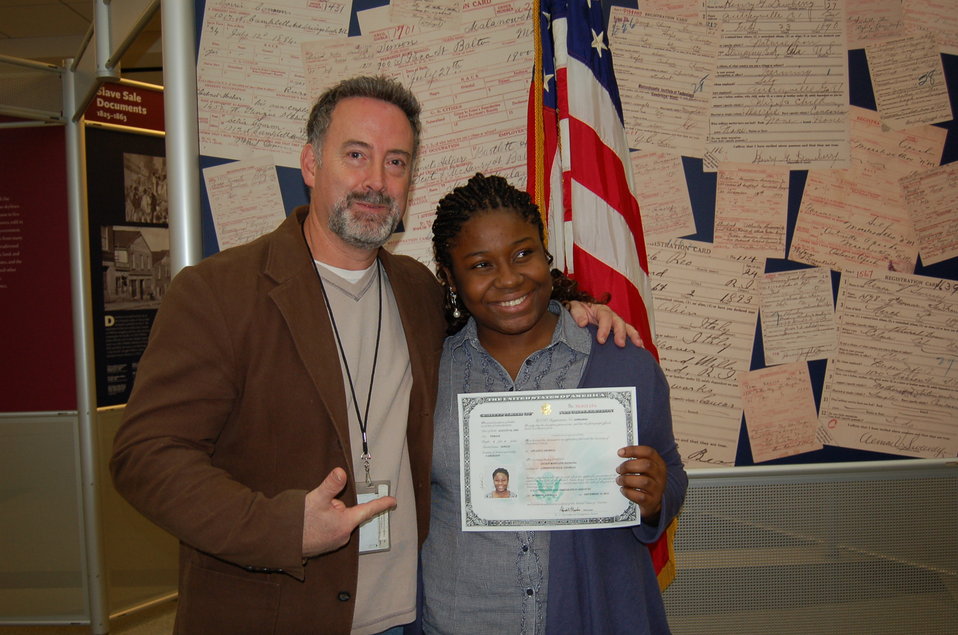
New Citizens